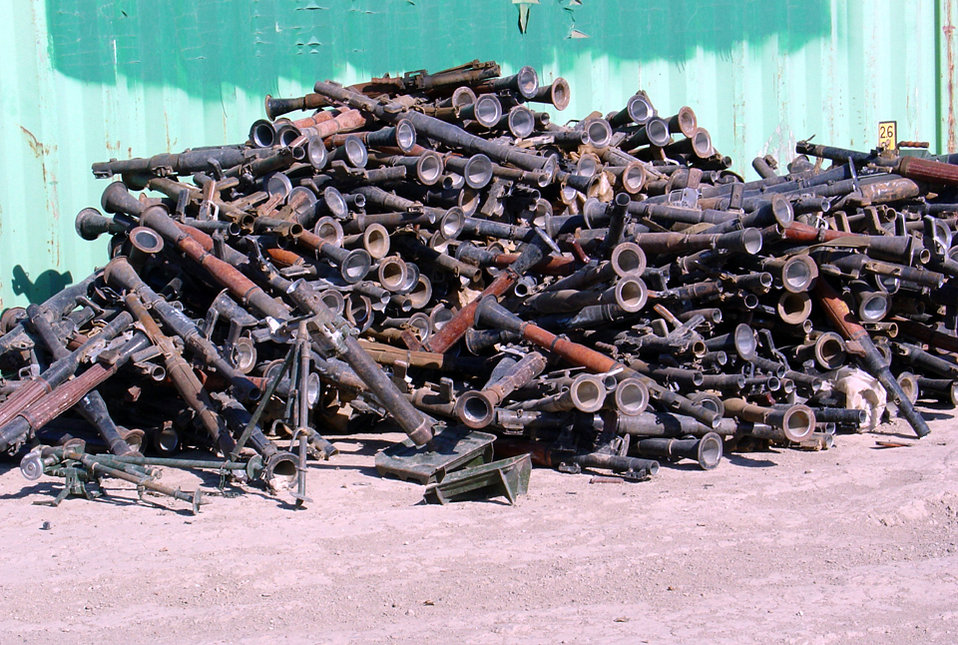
Airmen destroy grenade launchers

TALLIL AIR BASE, Iraq -- Airmen from the 407th Expeditionary Civil Engineer Squadron here destroyed more than 600 rocket-propelled grenade launchers collected by coalition forces throughout southern Iraq.